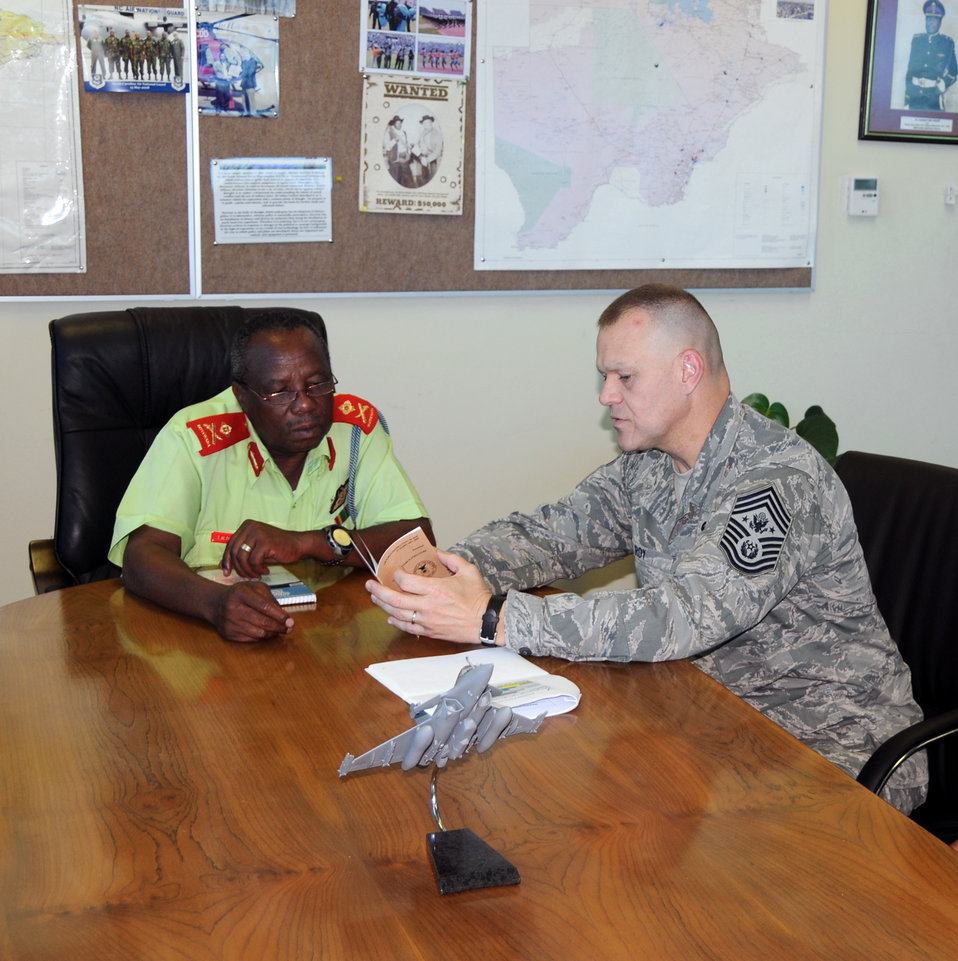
CMSAF visits Botswana

Chief Master Sgt. of the Air Force James A. Roy discusses the enlisted force structure with Botswana Defense Force Air Arm Command Maj. Gen. T.M. Paledi Oct. 11, 2010, during a visit to Thebaphatshwa Air Base, Botswana. Chief Roy and a team from 17th Air Force spent the day discussing enlisted force development members of with the BDF.